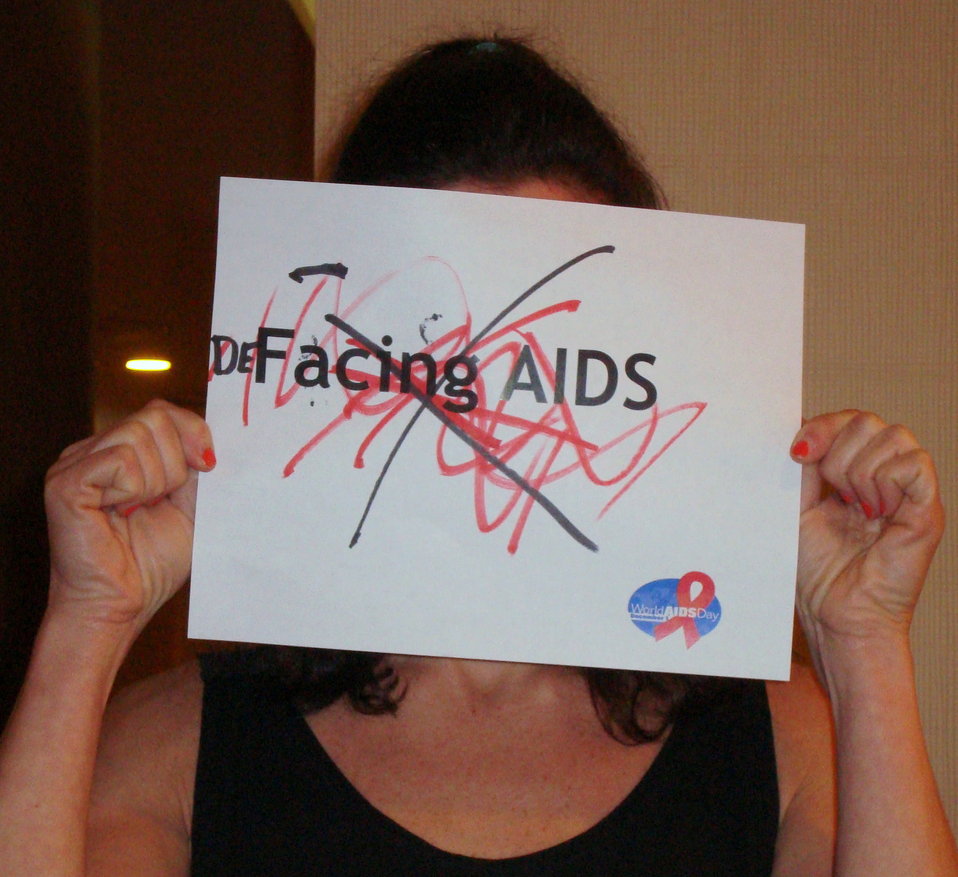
FacingAIDSCampaign 040